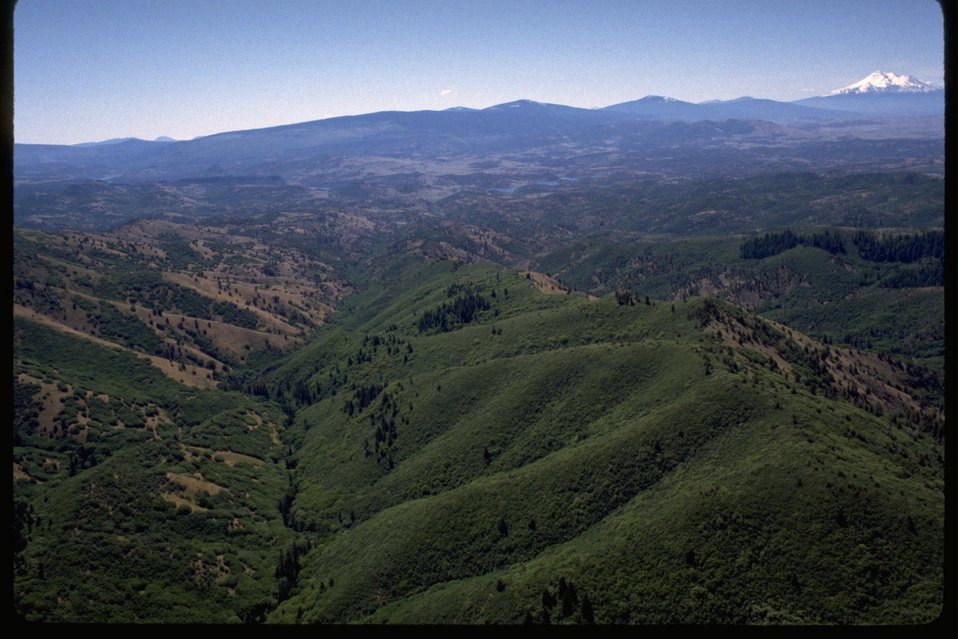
Scotch Creek RNA.